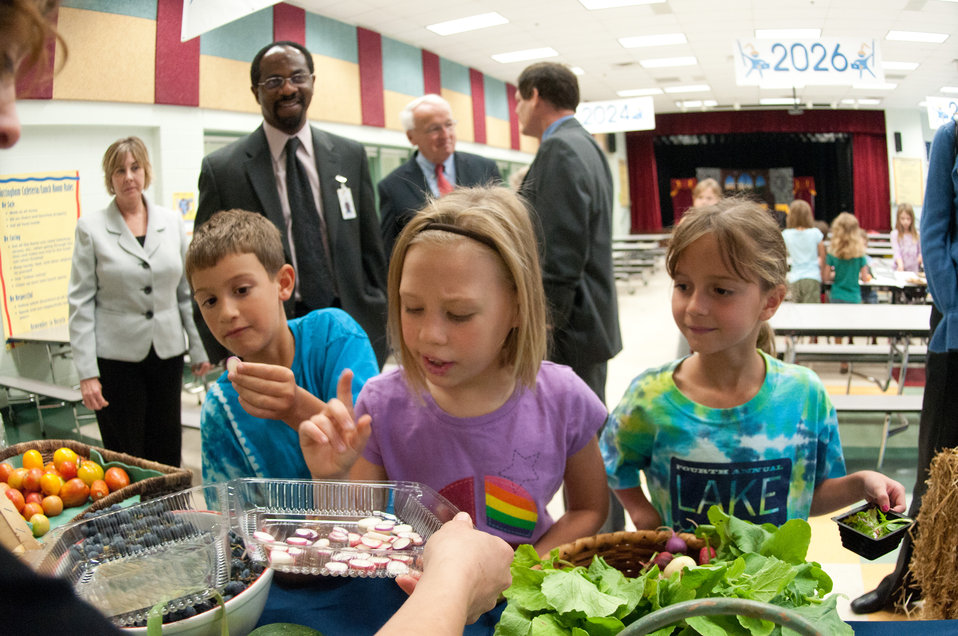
Under Secretary for Food, Nutrition and Consumer Services Kevin Concannon (red tie) saw students try foods such as radish, during the school lunch program at Nottingham Elementary School in Arlington, VA, on Wednesday, October 12, 2011. Farmers from Bigg Riggs Farm in Hampshire County, WV, and Maple Avenue Market Farm in Vienna, VA were very popular with the students. Today's menu included roasted chicken, roasted butternut squash with dried cranberries, farm fresh mixed lettuce salad, turkey wraps, pita wedges, hot muffins, carrots, Asian pears and more.